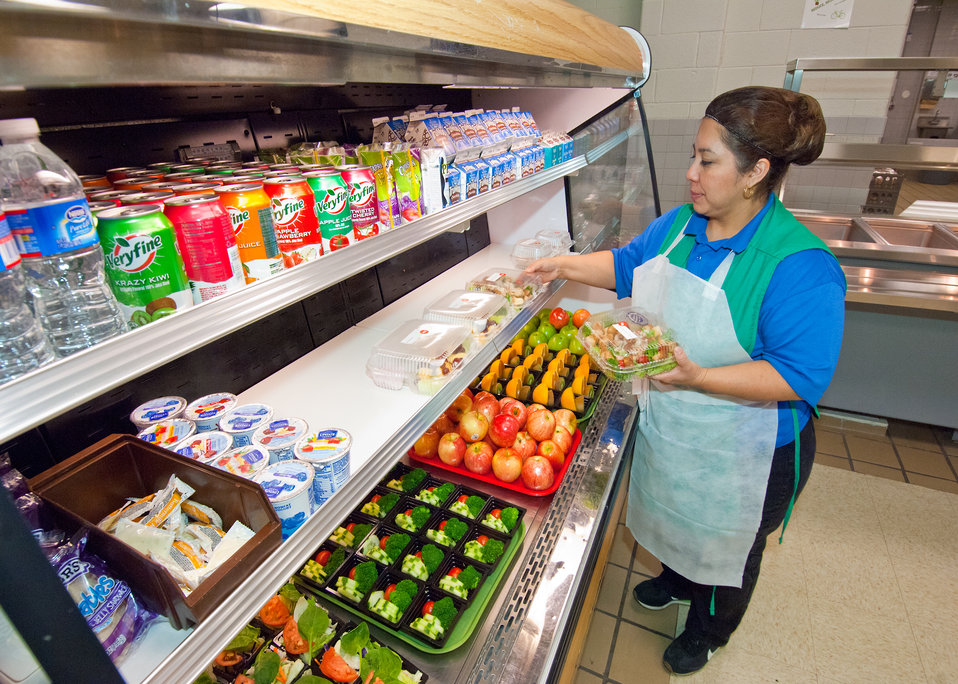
Magaly Valentin, Arlington Food Services places fresh salads for students, the salads are available to students through the National School Lunch Program. at Washington-Lee High School in Arlington, Virginia, on Wednesday, October 19, 2011. The National School Lunch Program is a federally assisted meal program administered by the United States Department of Agriculture, Food and Nutrition Service operating in public, nonprofit private schools and residential child care institutions. It provides nutritionally balanced, low-cost or free lunches to children each school day.